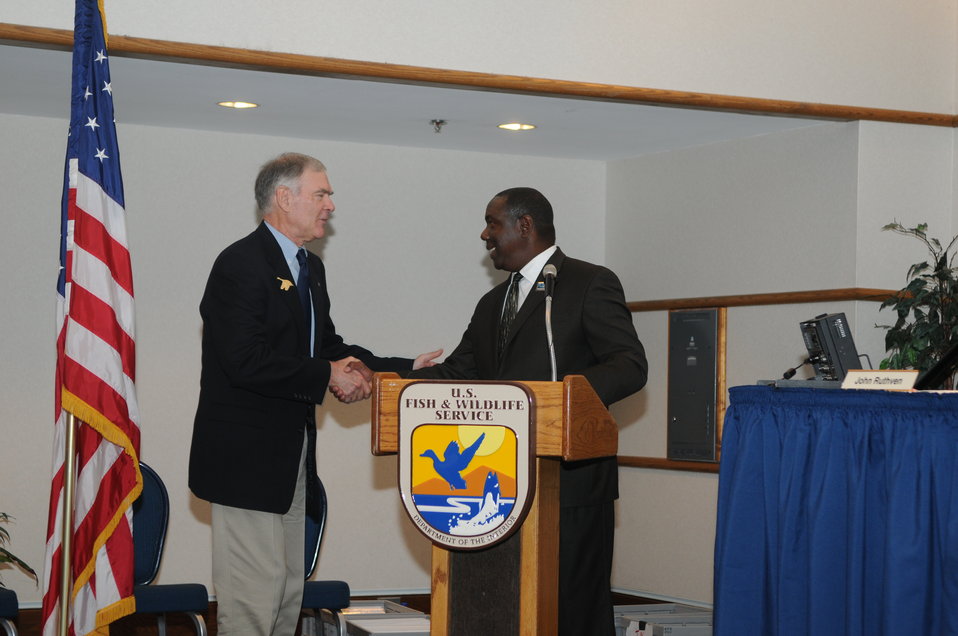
Jerome Ford (USFWS) introduced John Cornely, one of the contest judges.